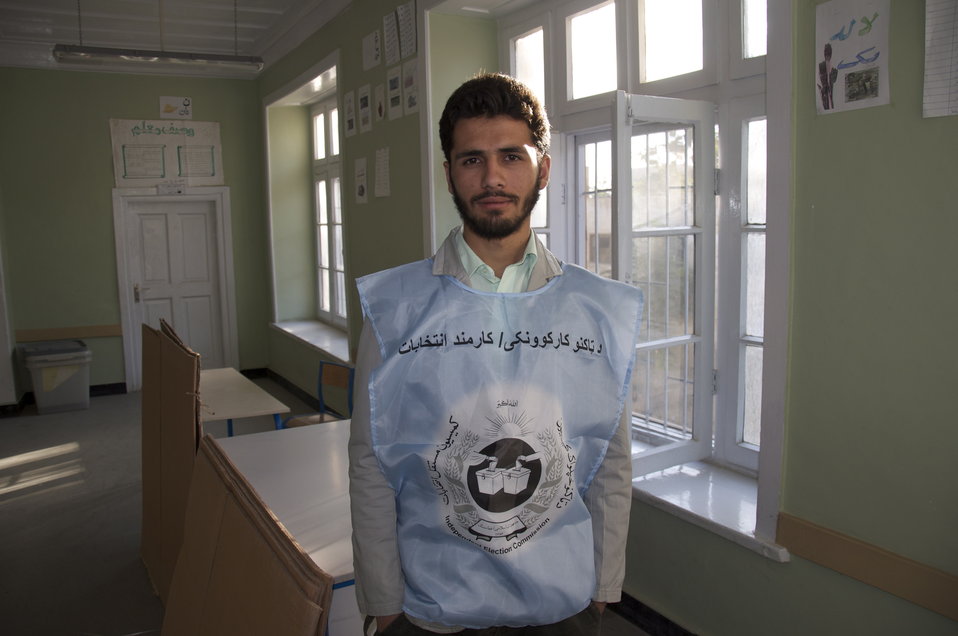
IEC Election Worker